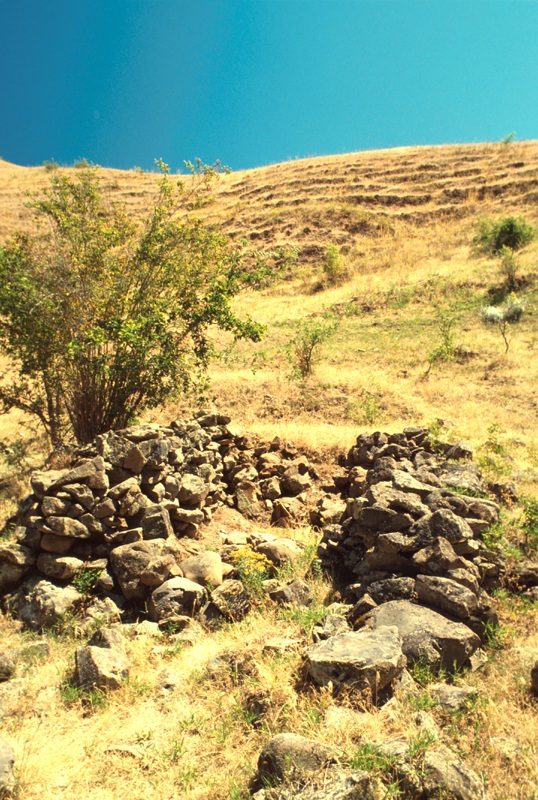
Stone house foundation Cottonwood Field Office Upper Columbia Salmon Clearwater